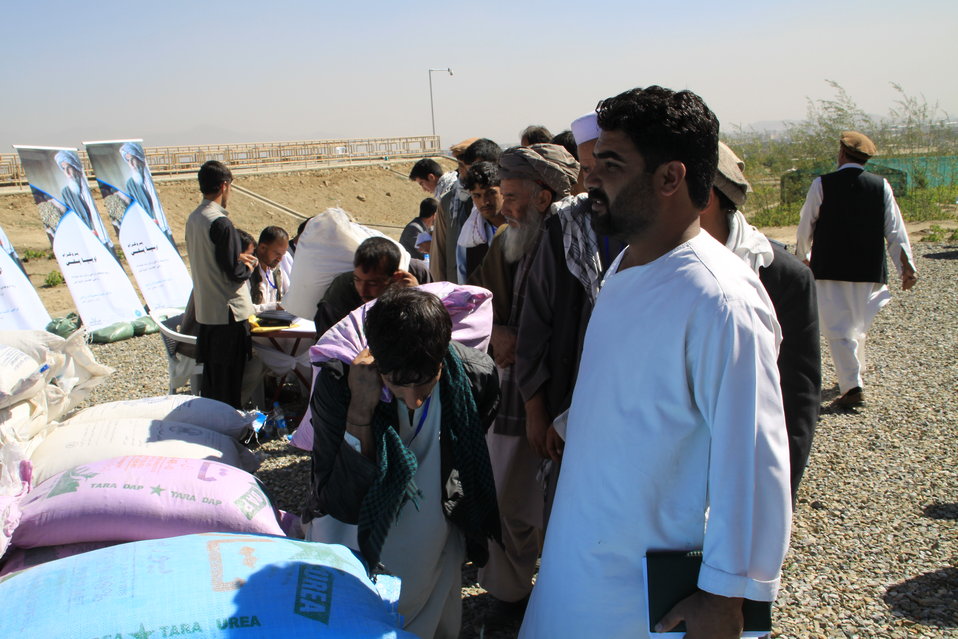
AVIPA Plus Wheat Seed Distribution 101005

US Ambassador Karl Eikenberry and USAID Acting Mission Director Kevin Brownawell joined the Minister of Agriculture, Irrigation and Livestock, H.E. Minister Mohammed Rahimi in signing a Memorandum of Understanding and distributing vouchers to area farmers for wheat and fertilizer.

US Ambassador Karl Eikenberry and USAID Acting Mission Director Kevin Brownawell joined the Minister of Agriculture, Irrigation and Livestock, H.E. Minister Mohammed Rahimi in signing a Memorandum of Understanding and distributing vouchers to area farmers for wheat and fertilizer.

US Ambassador Karl Eikenberry and USAID Acting Mission Director Kevin Brownawell joined the Minister of Agriculture, Irrigation and Livestock, H.E. Minister Mohammed Rahimi in signing a Memorandum of Understanding and distributing vouchers to area farmers for wheat and fertilizer.